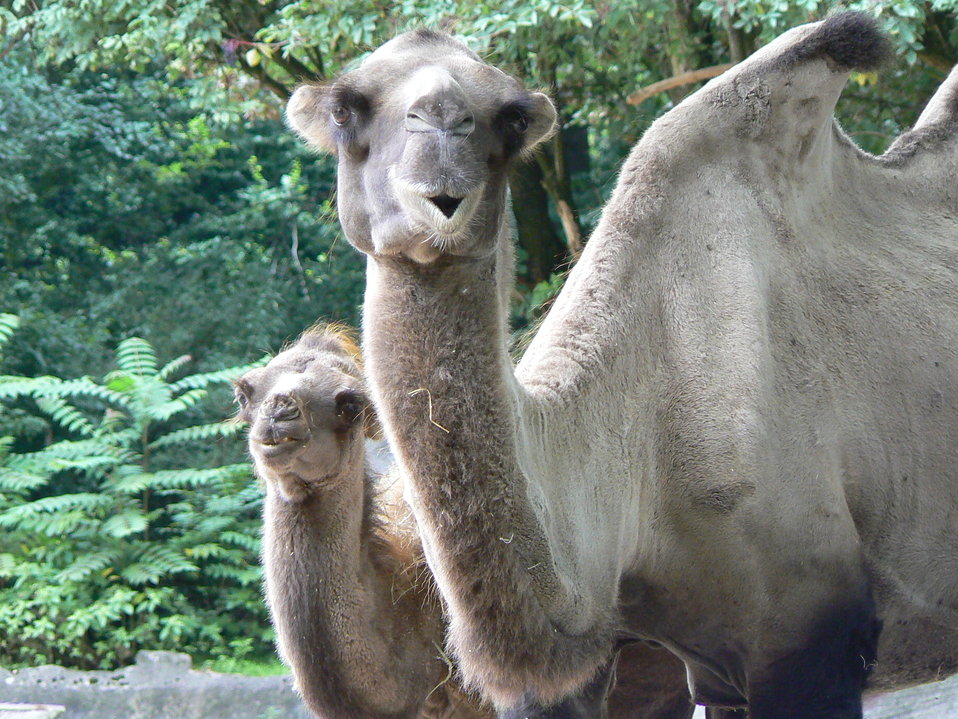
Camel at the zoo in hamburg, germany